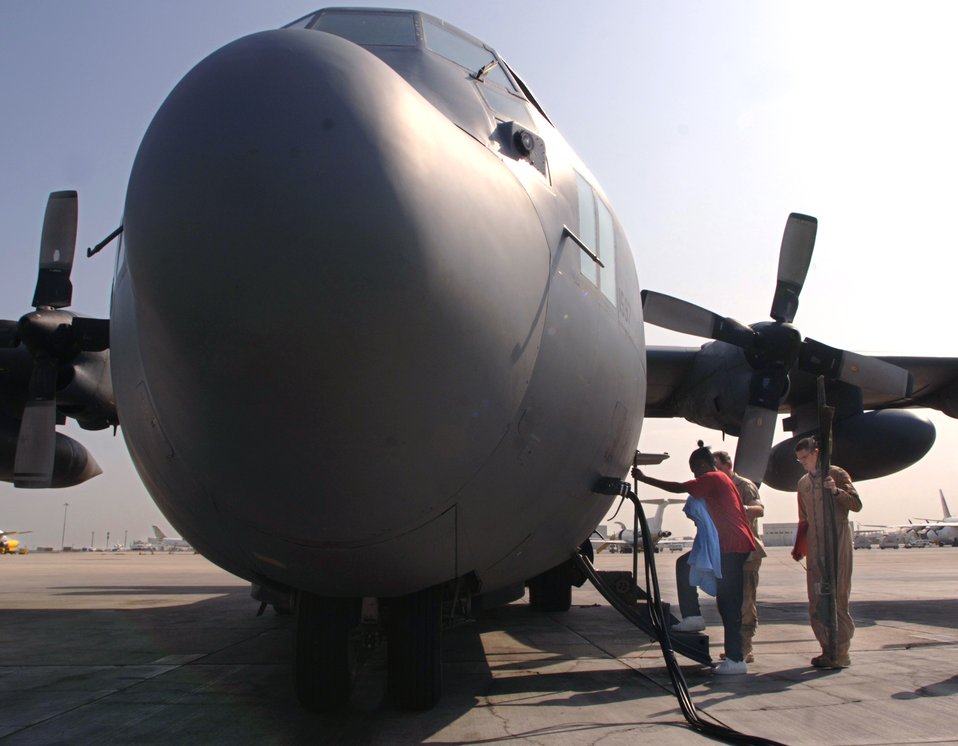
Aeromedical maneuevers

During a stop in Bahrain, Capt. Nathan Ferguson assists Navy medical coordinator, Petty Officer 1st Class Emanuel Waddell in the movement of a patient into an awaiting C-130 Hercules aircraft. Captain Ferguson is a flight nurse with the 379th Expeditionary Aeromedical Evacuation Squadron. He is deployed from the 43rd Aeromedical Evacuation Squadron at Pope Air Force Base, N.C.